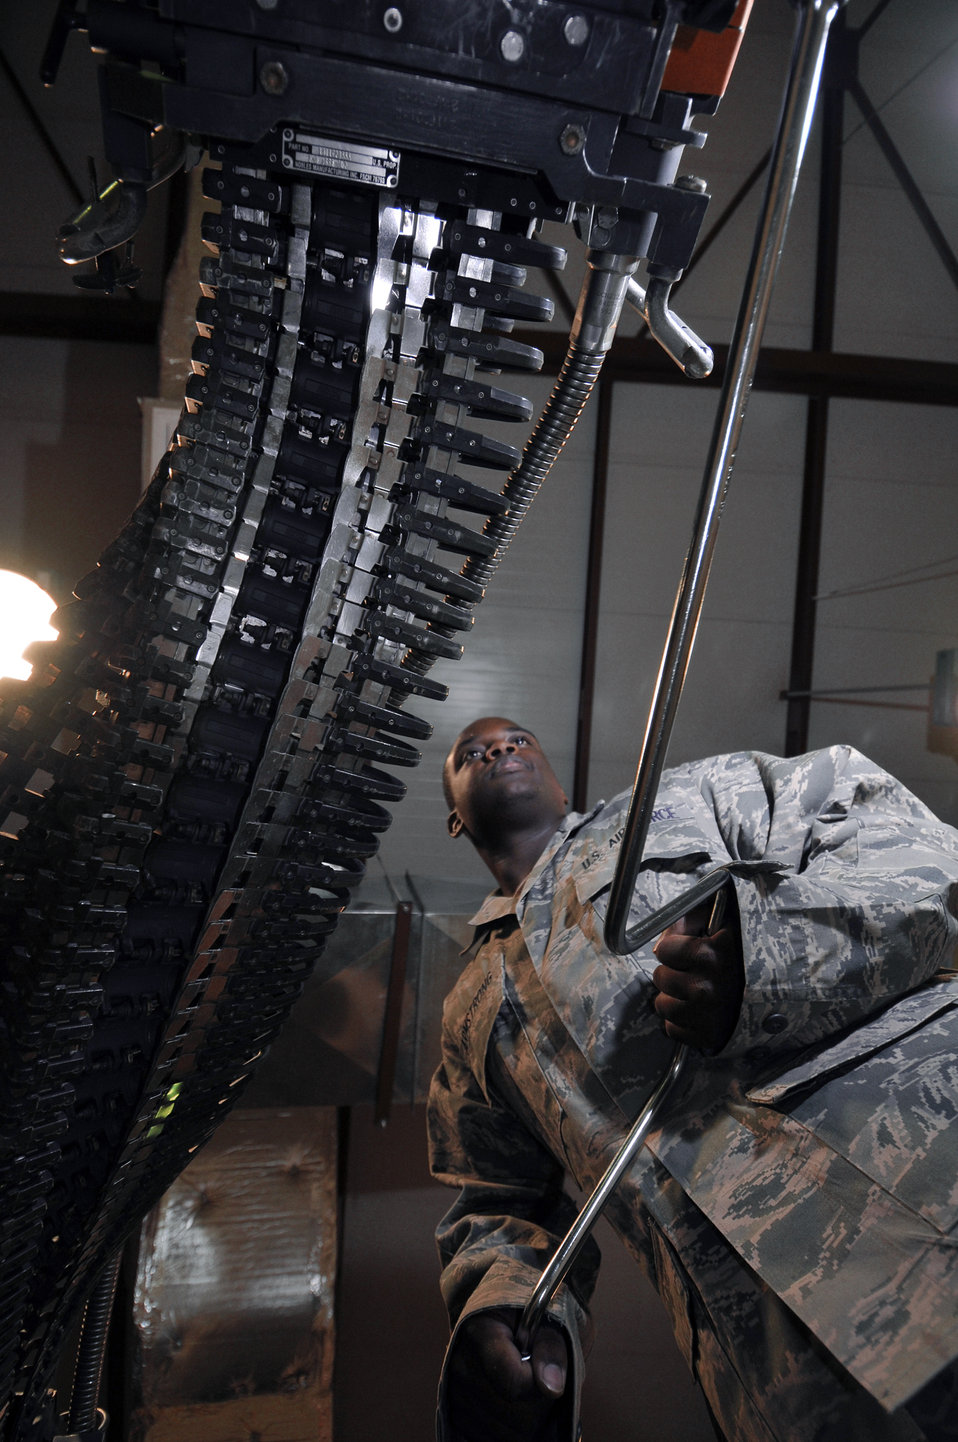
Round and around

Staff Sgt. Michael Armstrong cycles rounds through a universal ammunition loader to ensure proper operation July 17, 2010, at Joint Base Balad, Iraq. The loader works with the cannon on the F-16 Fighting Falcon. Sergeant Armstrong is an aircraft armament technician with the 332nd Expeditionary Maintenance Squadron.